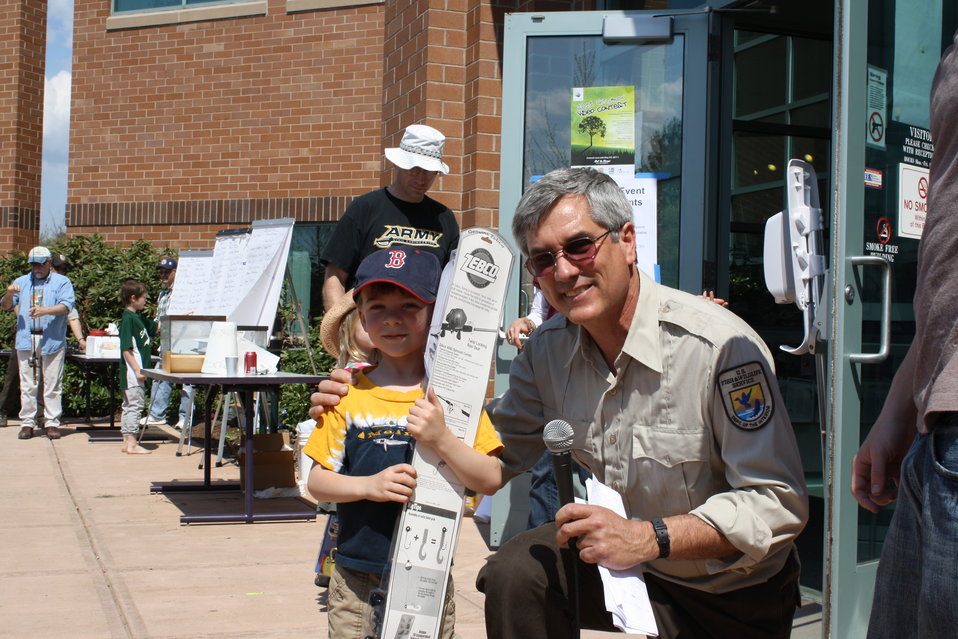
1st prize youngest

A winner at the USFWS fishing derby in Hadley, MA on May 7th.